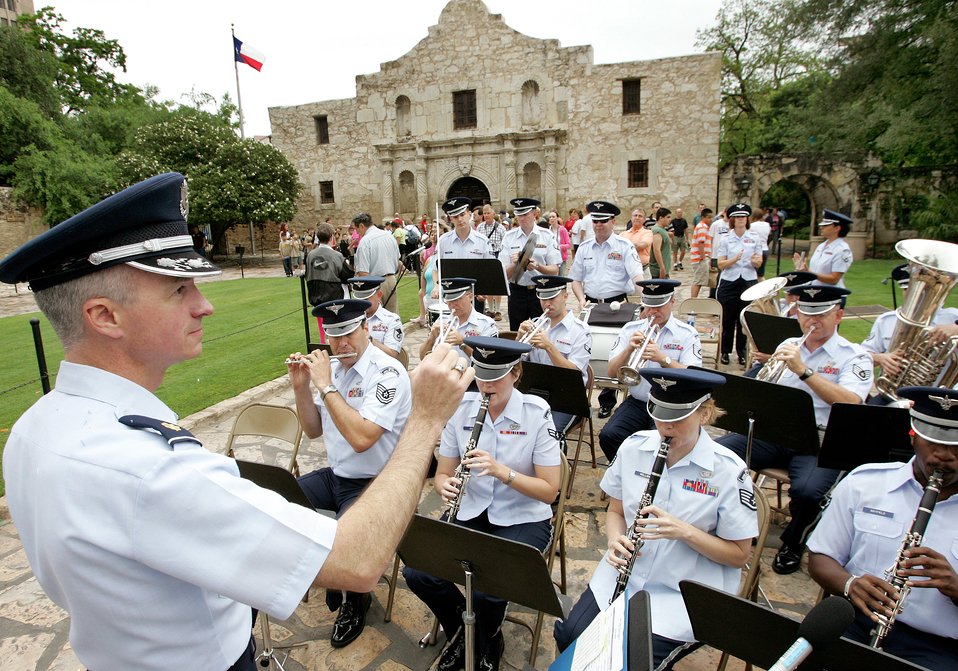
Fiesta

Maj. Dean Zarmbinski conducts the Air Force Band of the West in front of the Alamo during the opening ceremony of Fiesta, a 10-day celebration in San Antonio, on Friday, April 21, 2006. Major Zarmbinski is the band commander.